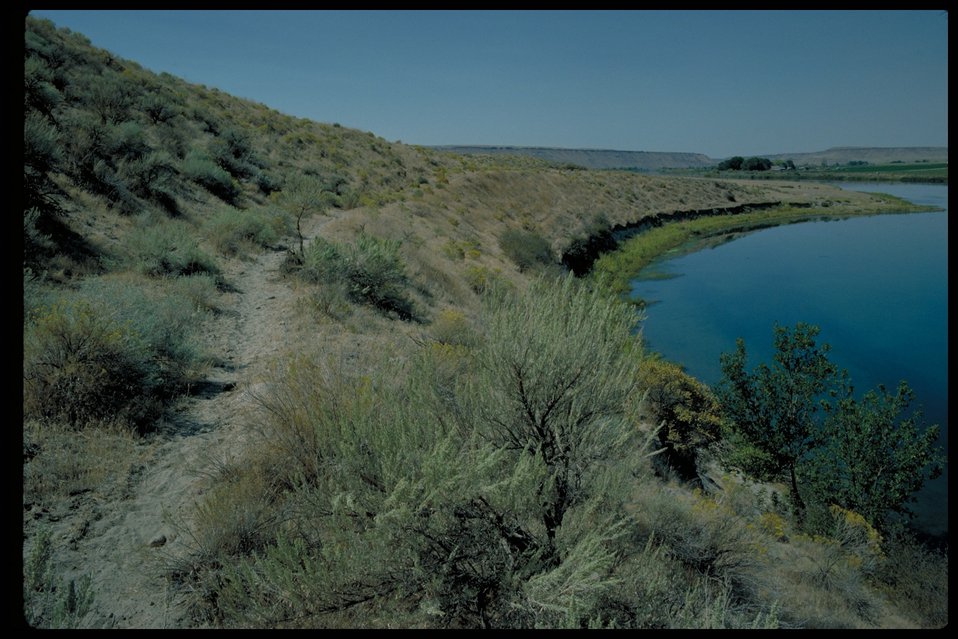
Oregon Trail South of Hammett Lower Snake River District